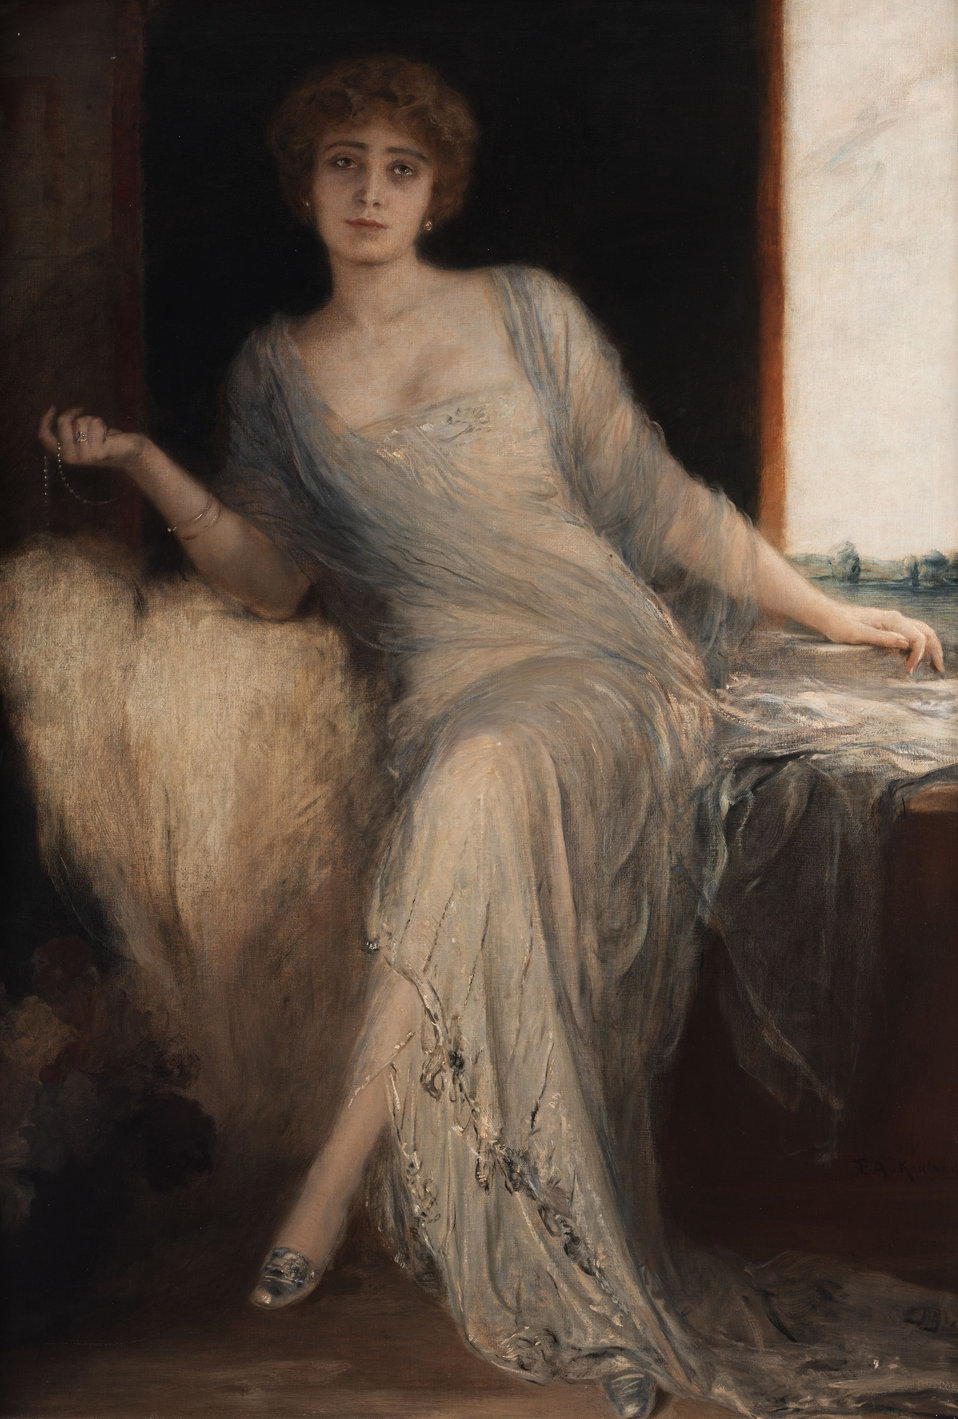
Portrait einer sitzenden Dame. Öl auf Leinwand. 160 x 110 cm. Rechts unten signiert „F. A. v. Kaulbach“.